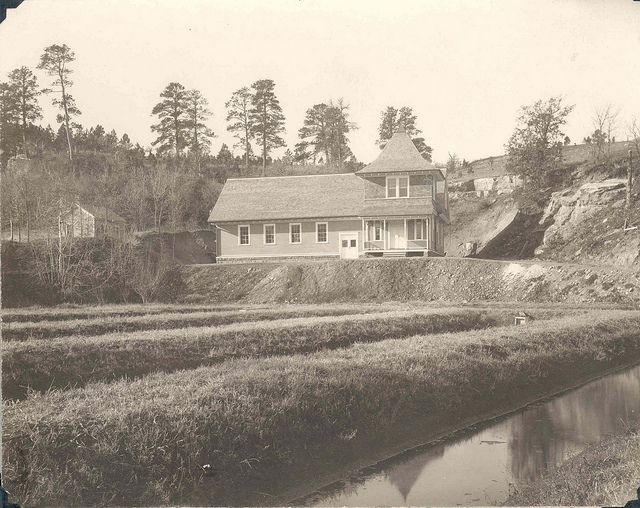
D.C. Booth hatchery building in 1899